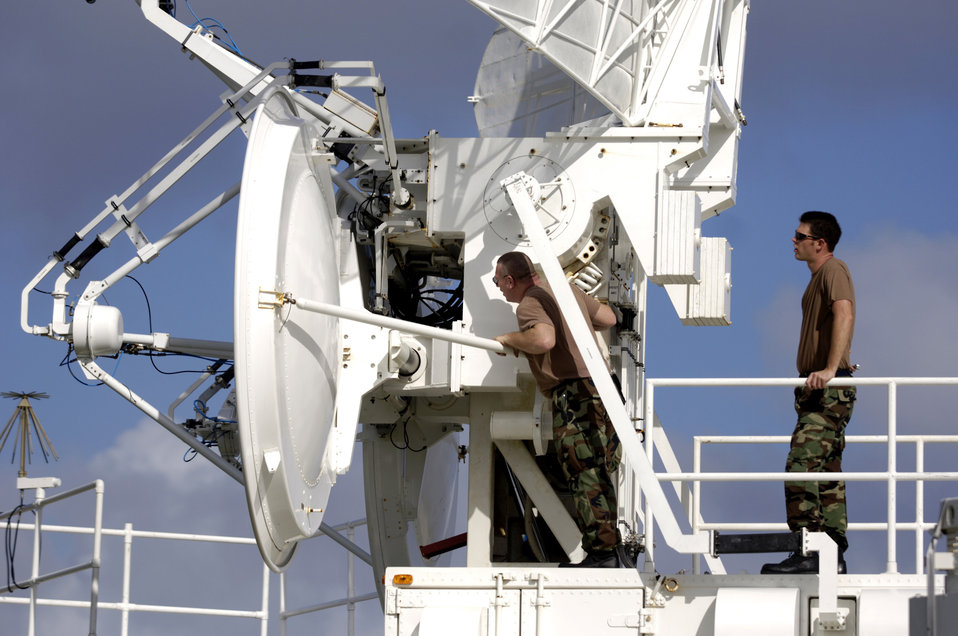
Radar inspection

ANDERSEN AIR FORCE BASE, Guam (AFPN) -- Tech. Sgt. John Cumbridge and Staff Sgt. Philip Neussendurfer inspect a radar site here. The site provides electronic threats such as anti-aircraft artillery, surface-to-air-missiles and airborne interceptors for aircraft training. Sergeants Cumbridge and Neussendurfer are radar technicians from the Idaho Air National Guard's 266th Range Squadron.